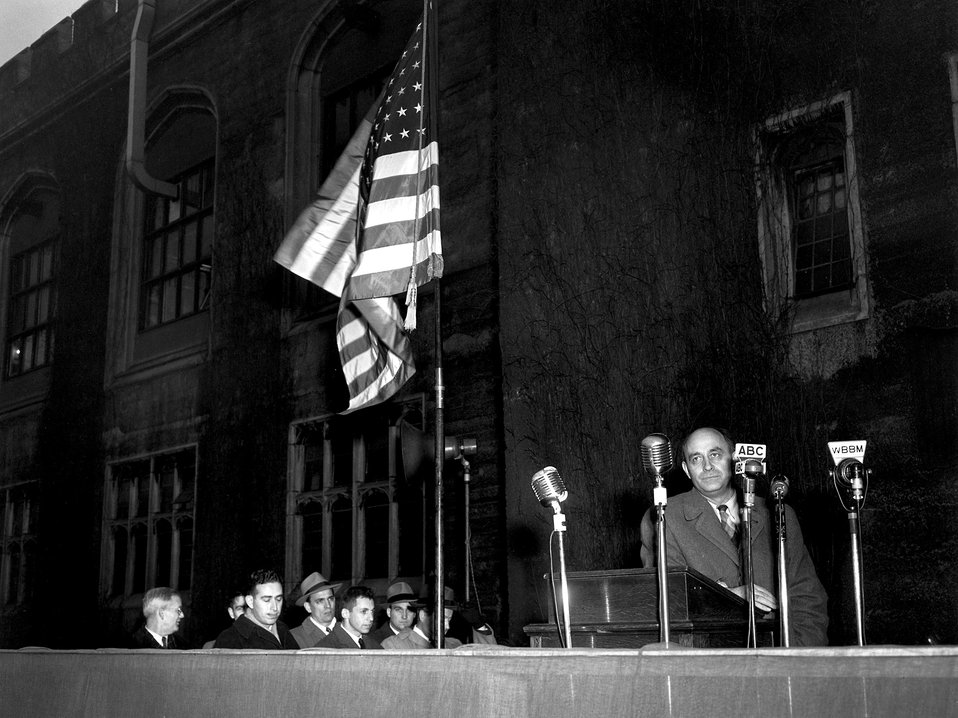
Fermi at the dedication of the plaque at Stagg Field, University of Chicago.